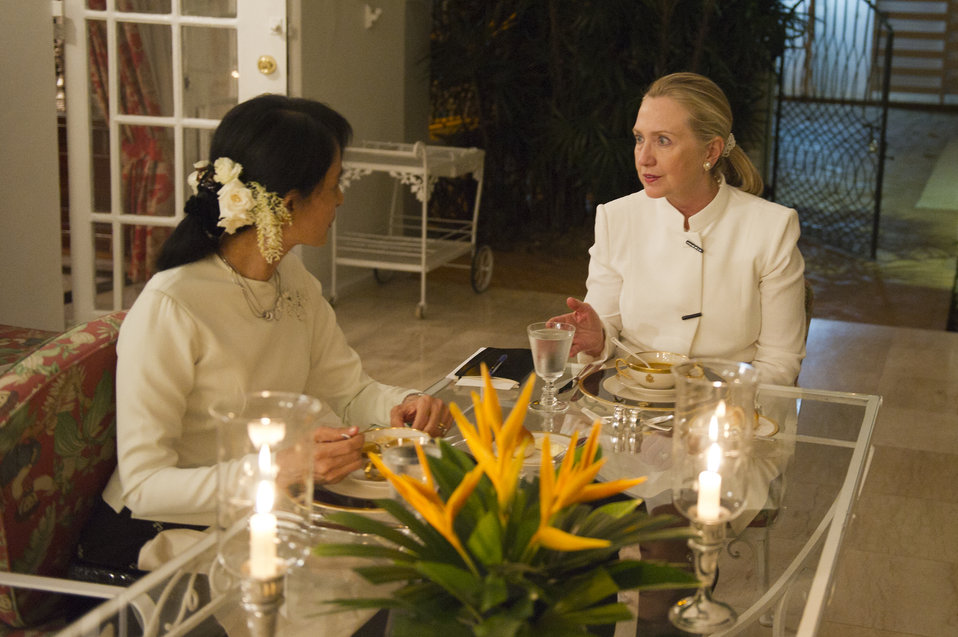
Secretary Clinton Meets With Daw Aung San Suu Kyi

U.S. Secretary of State Hillary Rodham Clinton meets with Daw Aung San Suu Kyi for dinner in Rangoon, Burma, on December 1, 2011.